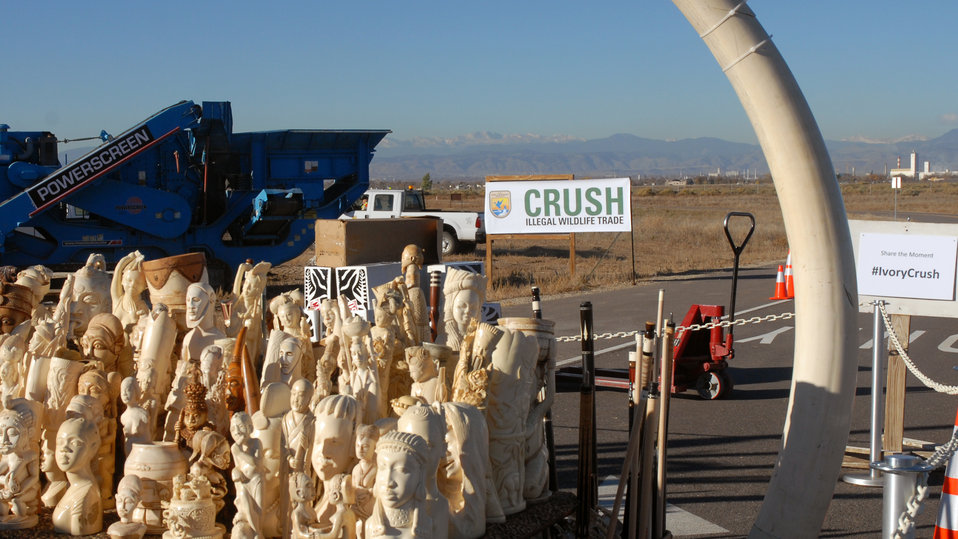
The destruction of this ivory will be witnessed by representatives of African nations and other countries, dozens of leading conservationists and international media representatives.